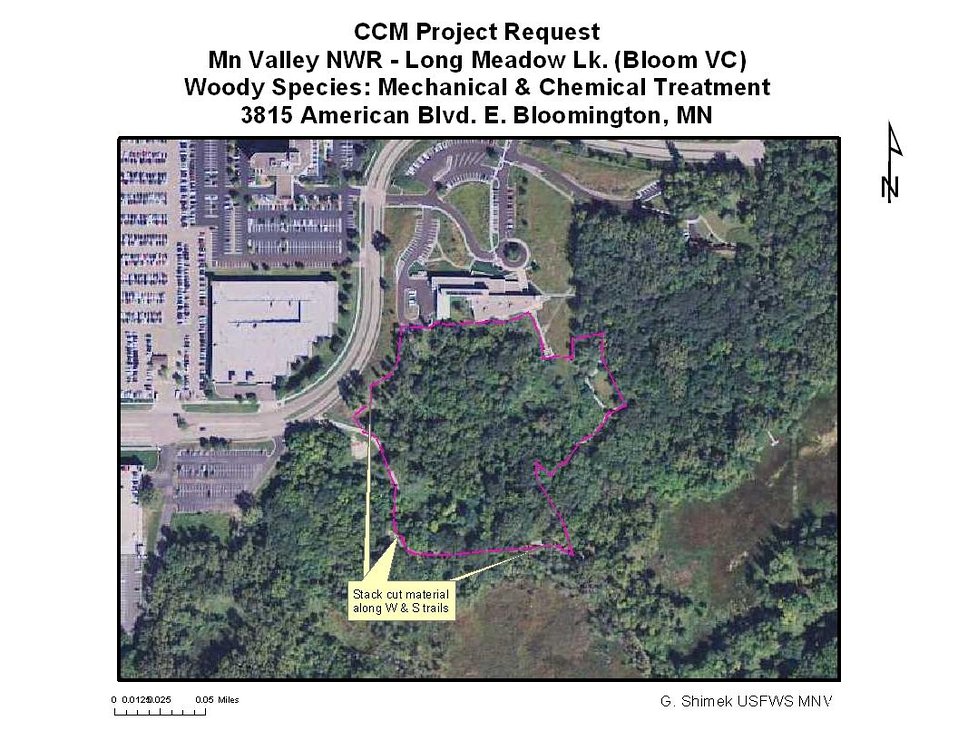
Restoration area behind the Bloomington Visitor Center.